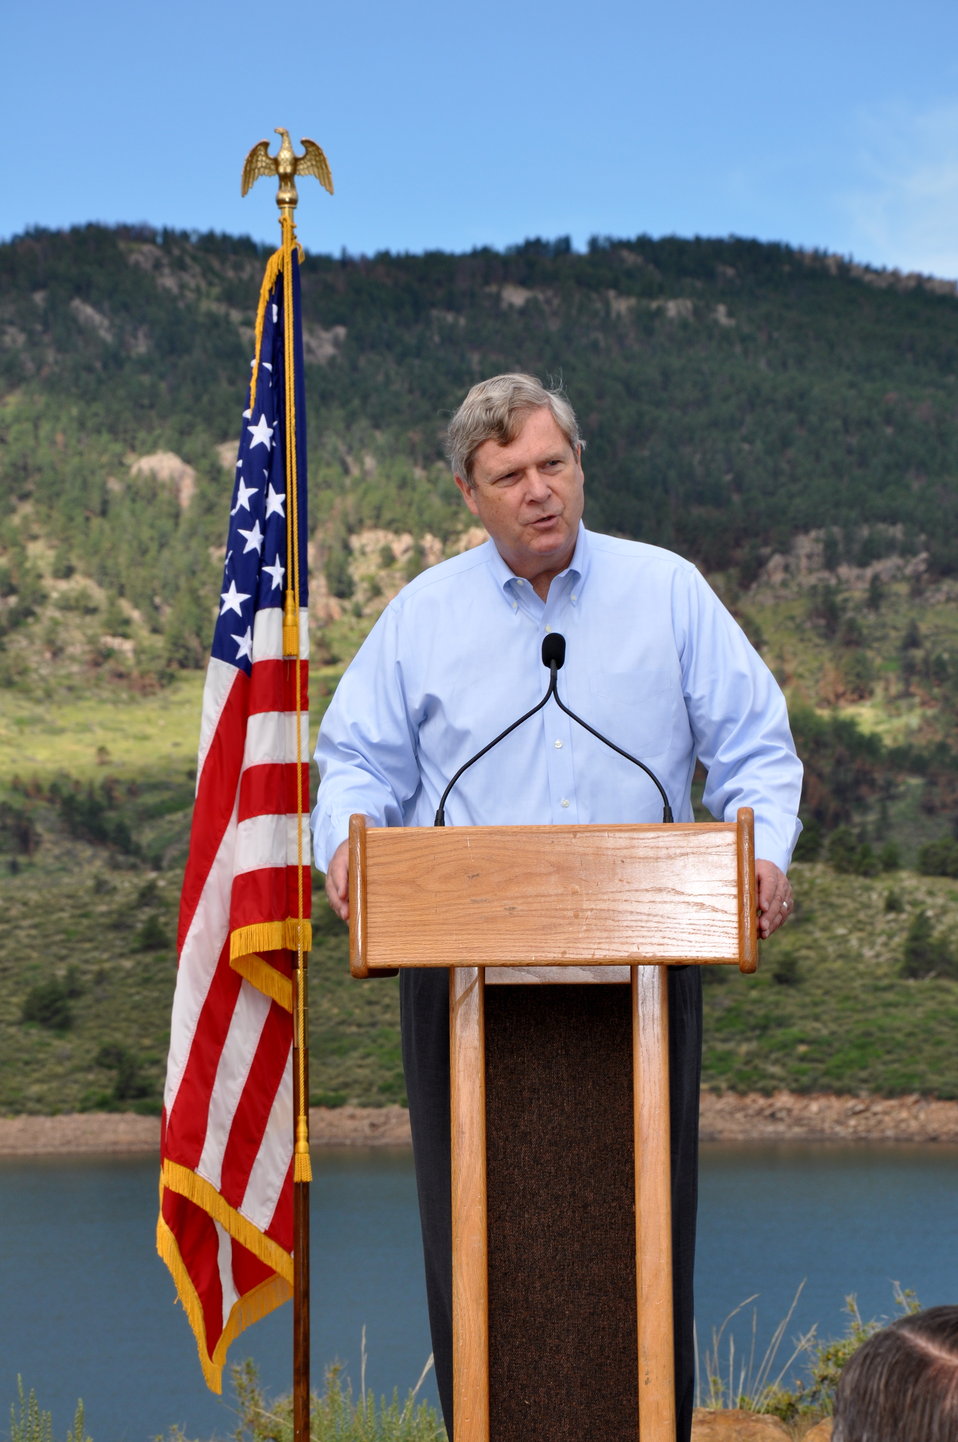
Agriculture Secretary Tom Vilsack speaks at the Memorandum of Understanding (MOU) signing held at the Horsetooth Reservoir in Fort Collins, CO on Jul. 19, 2013. This MOU will facilitate activities such as wildfire risk reduction through forest thinning, prescribed fire and other forest health treatments; minimizing post-wildfire erosion and sedimentation; and restoring areas that are currently recovering from past wildfires through tree planting and other habitat improvements.